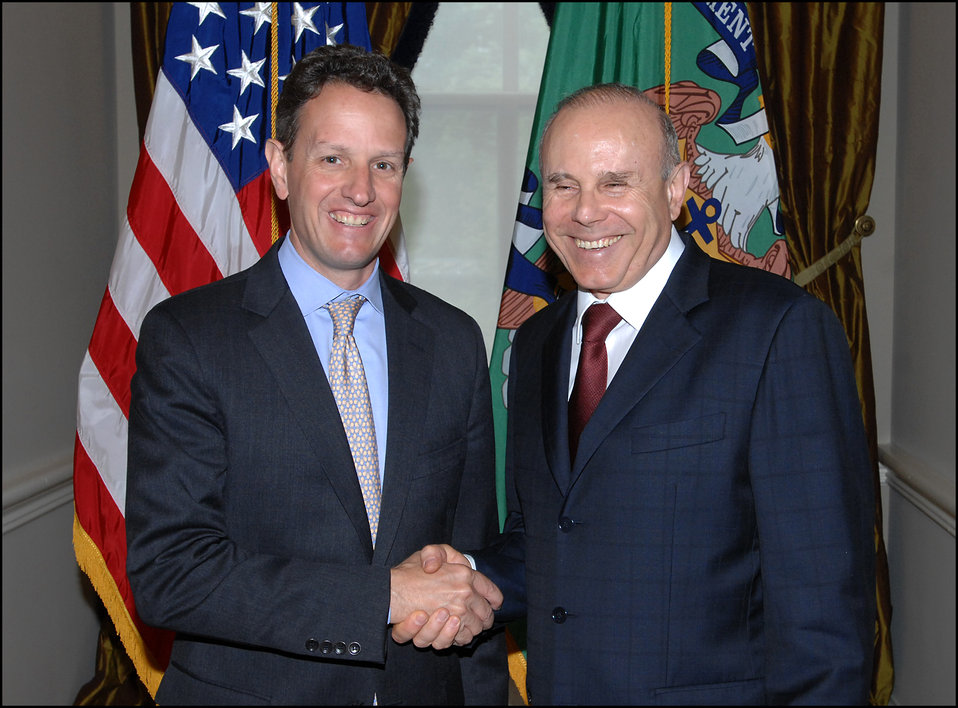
Brazilian Finance Minister Mantega

On August 5, 2009, Secretary Geithner met with Brazilian Finance Minister Mantega.